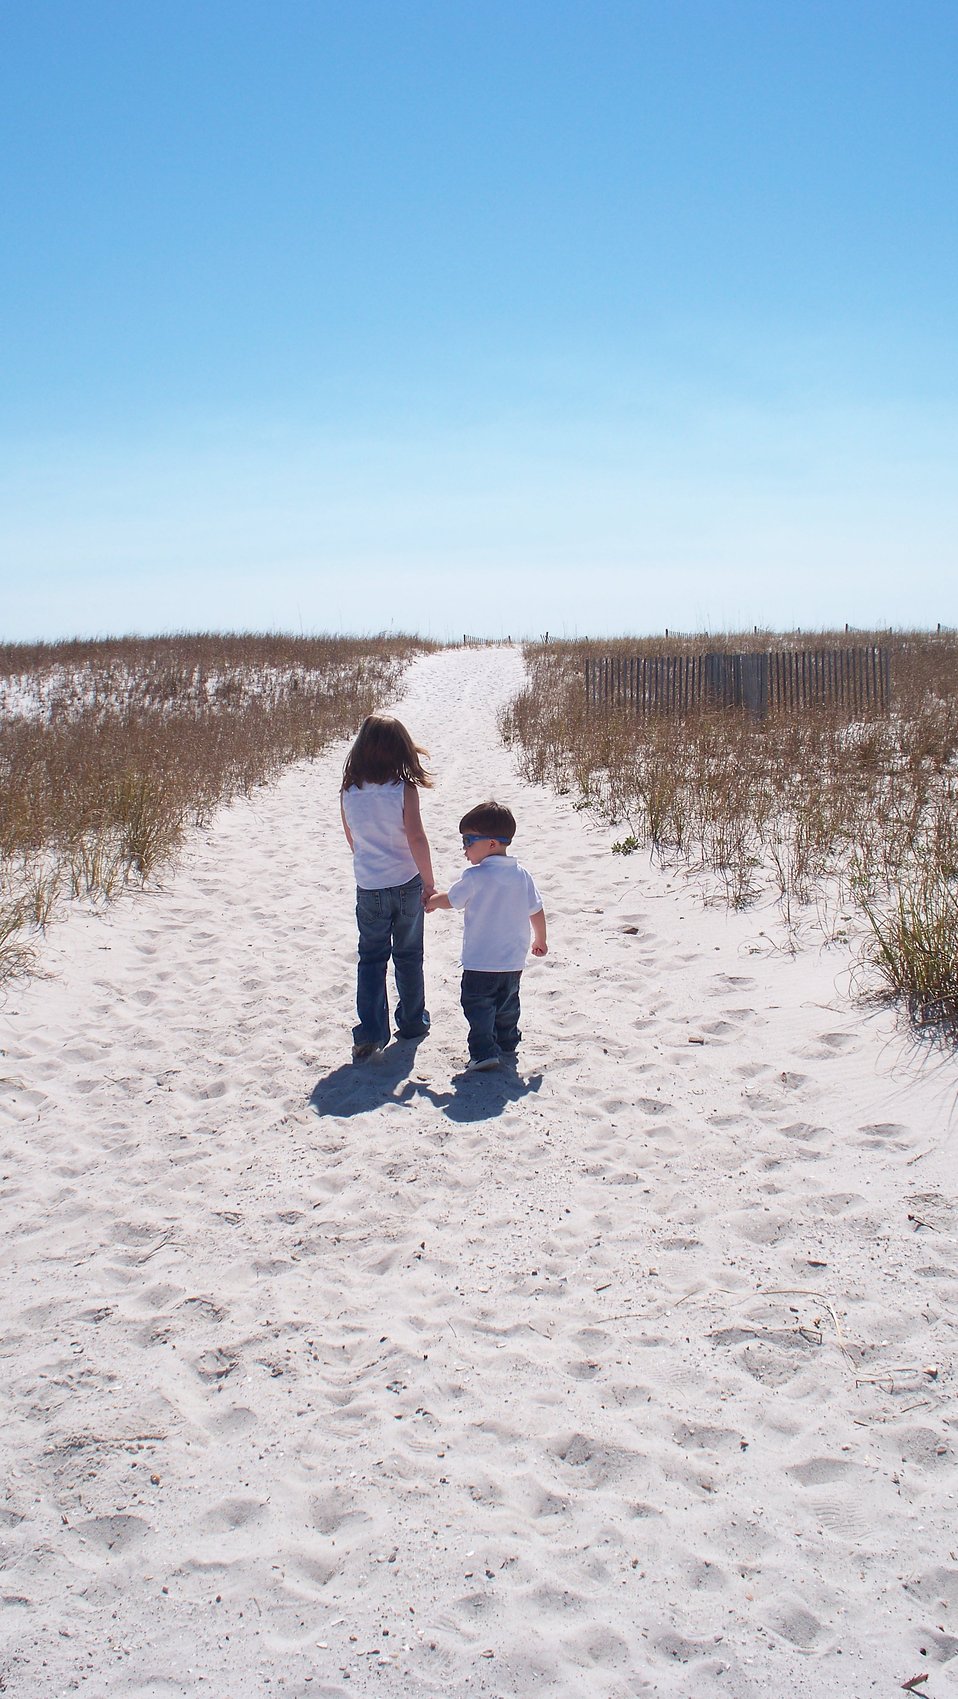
Uploaded by request of Sasha Staggs.

This photo shows his two children, ages 6 and 2, on their first visit to the beach.

Taken on March 2, 2008.